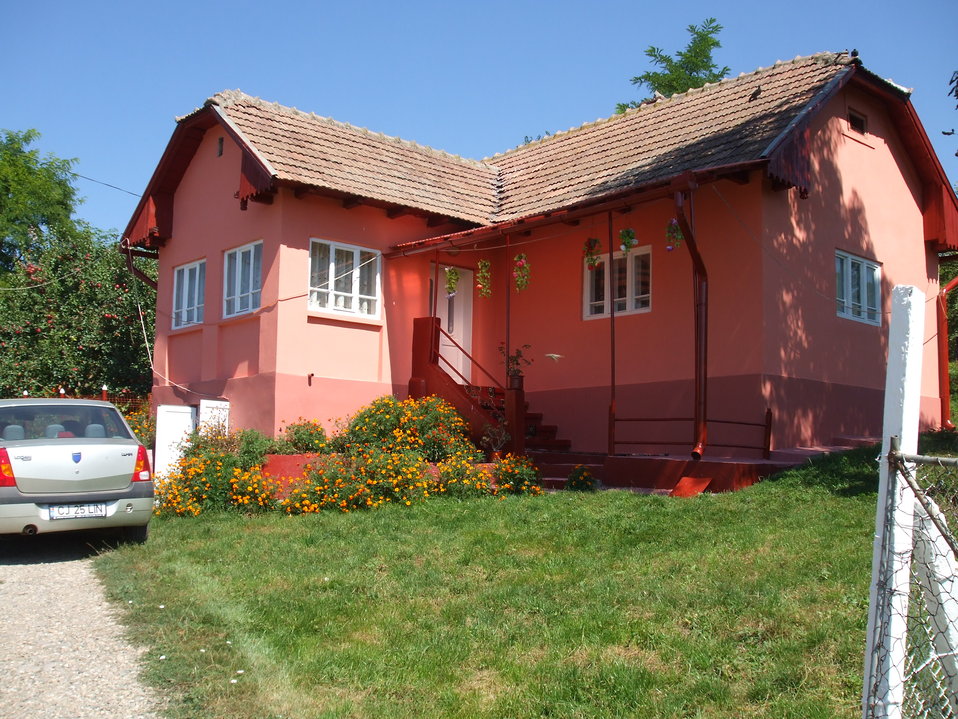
Română: Casă interbelică țărănească din Câmpia Transilvaniei, satul Valea Florilor, jud.Cluj .